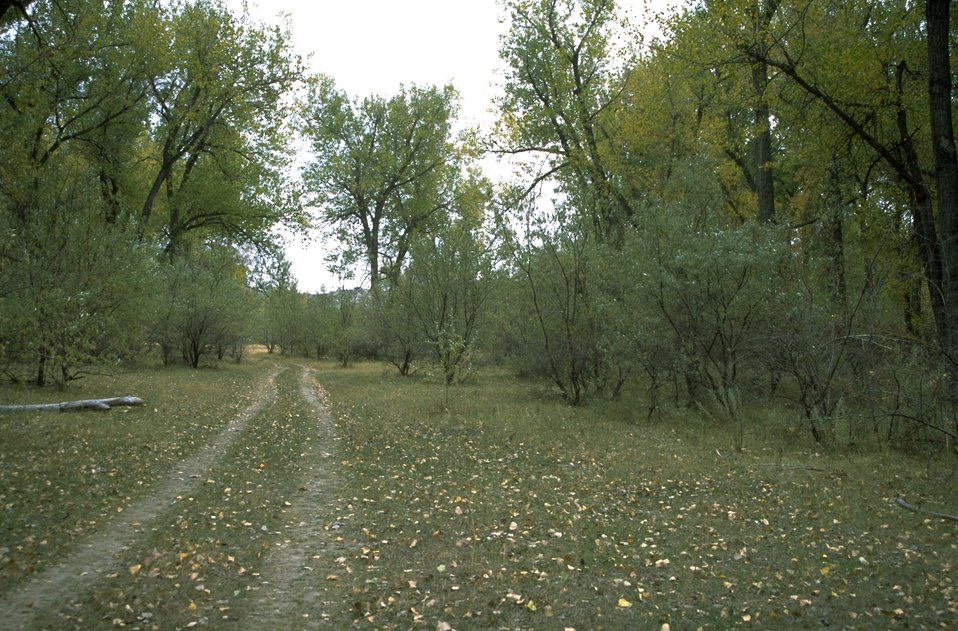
Trail bordered by trees in the Howrey Island Recreation Area